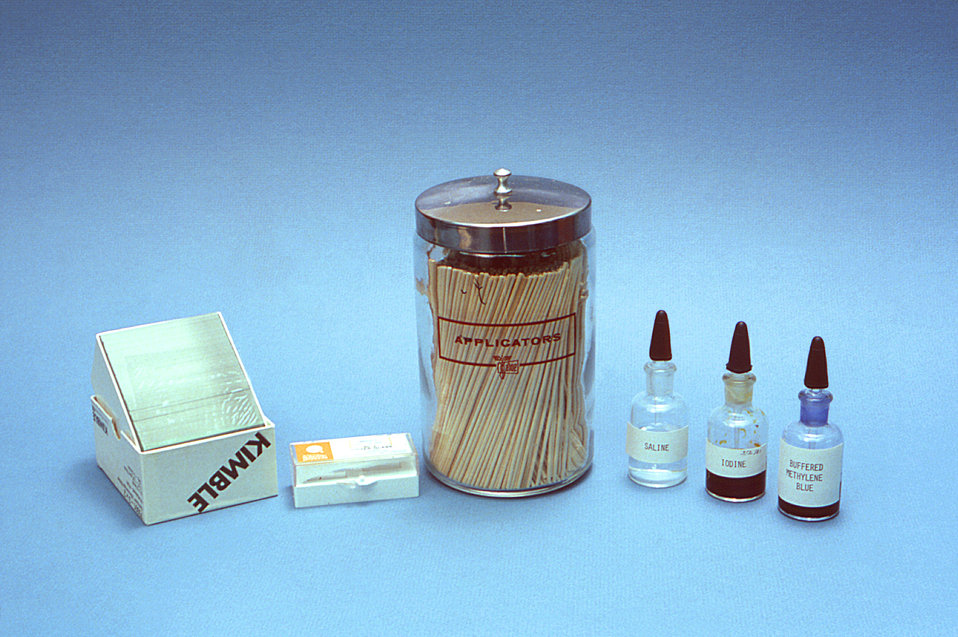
This 1981 photograph depicted the materials used in a laboratory setting in order to carry out the trichrome staining method during the preparation of a wet fecal mount.Trichrome Staining Procedure